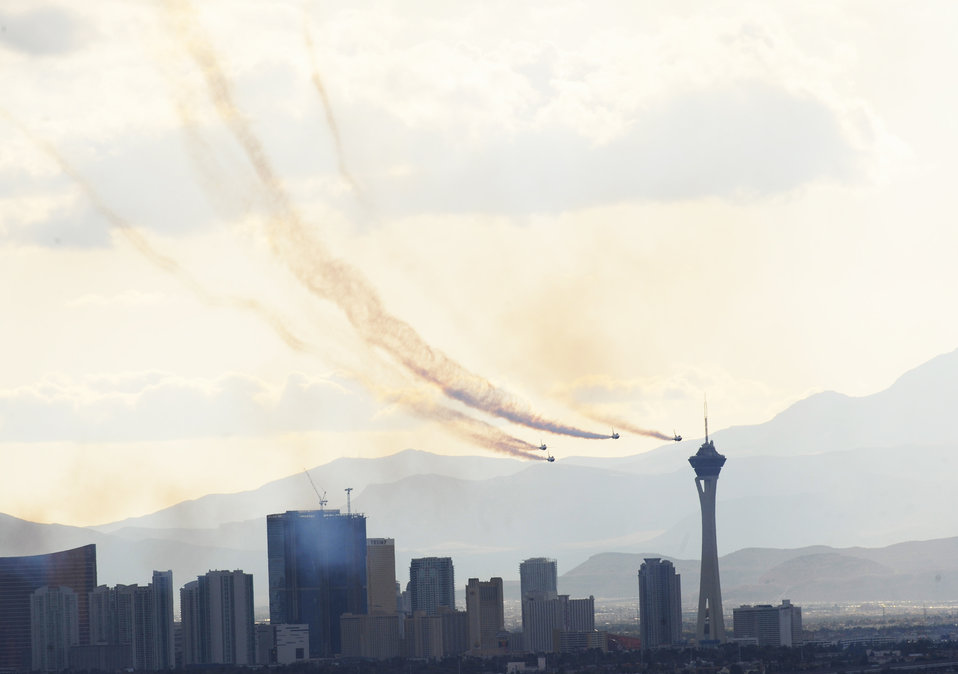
Thunderbirds close air show season

Flying over the Las Vegas strip, the U. S. Air Force Air Demonstration Squadron Thunderbirds